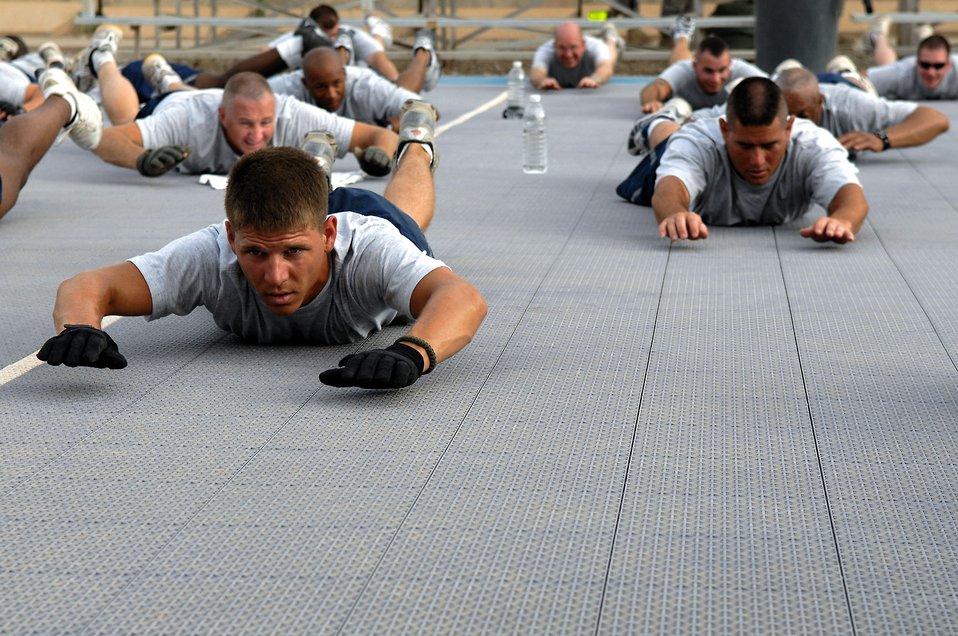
Horsepower

Staff Sgt. Patrick McPherson performs a superman exercise June 3 at Balad Air Base, Iraq. The exercise works muscles in the lower back. Members of the 557th Expeditionary RED HORSE Squadron meet early each morning to workout as a unit, promote the Air Force's fit-to-fight lifestyle and to build morale. The 557th ERHS staff provides direct support to the Army's 20th Engineer Brigade for large-scale construction projects throughout Iraq. Sergeant McPherson is a 557th ERHS structural maintenance member deployed from Patrick Air Force Base, Fla.